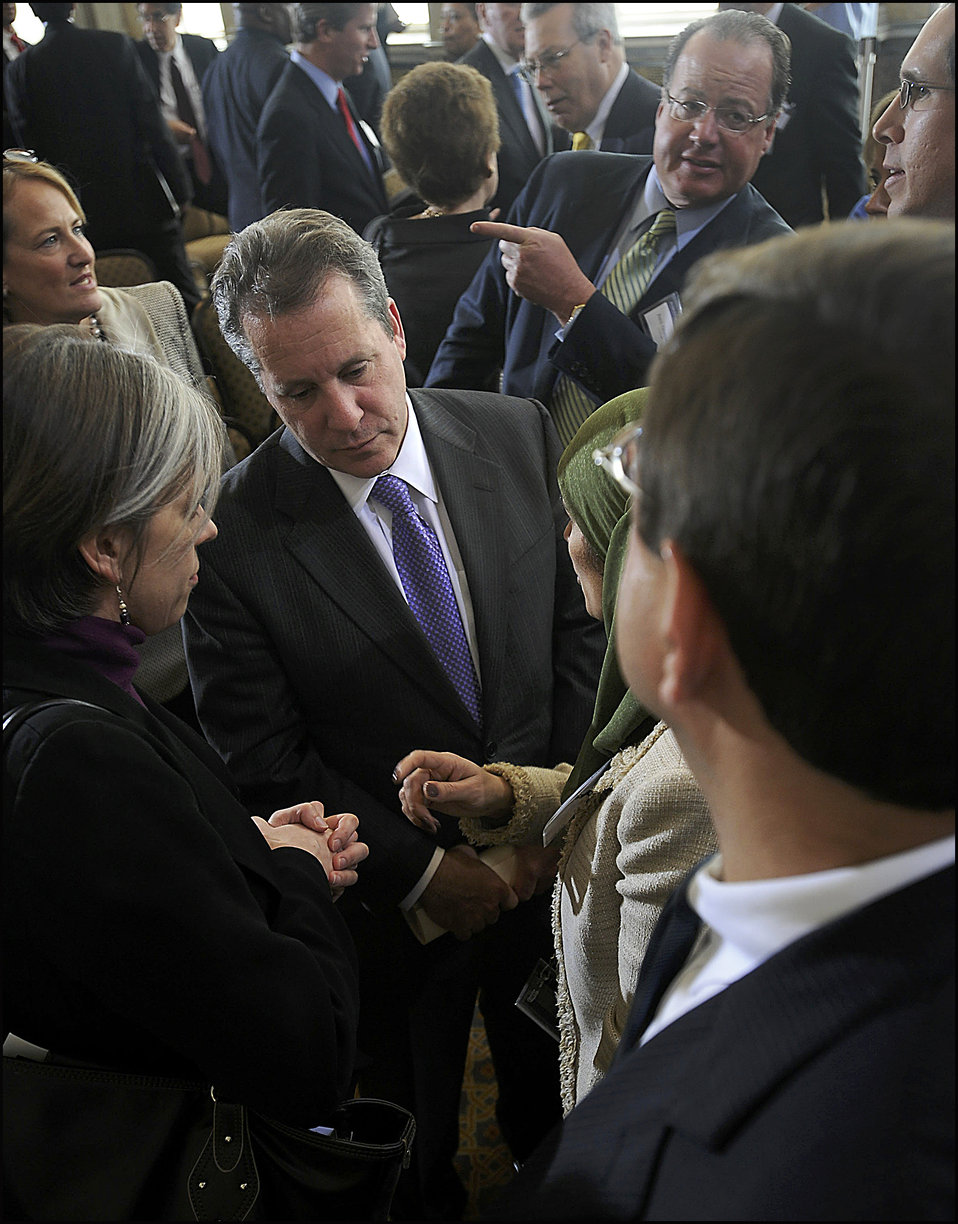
Access to Capital Conference

National Economic Council Director Gene Sperling with attendees after the conference.